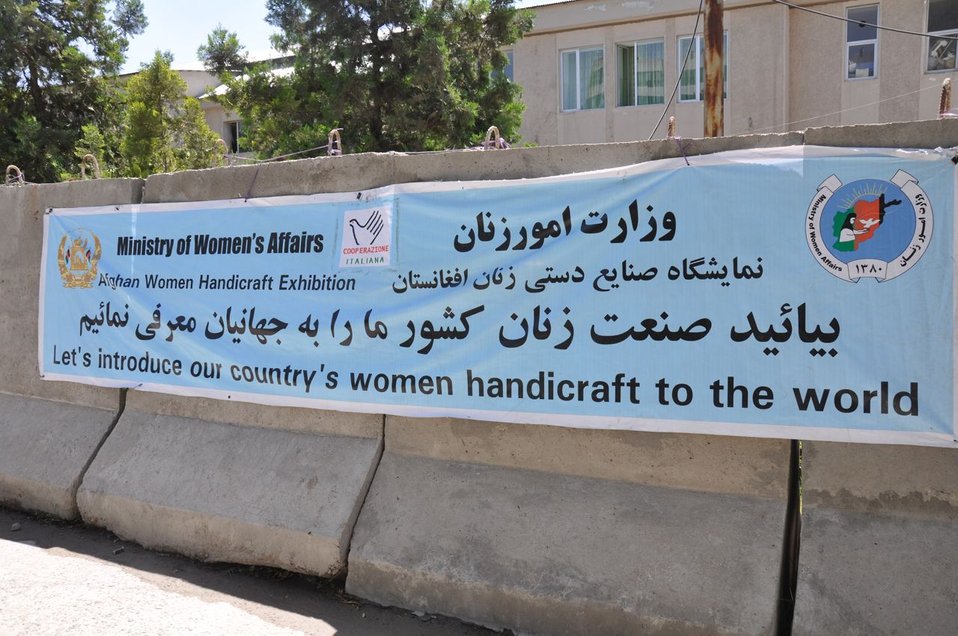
Mother's Day in Afghanistan